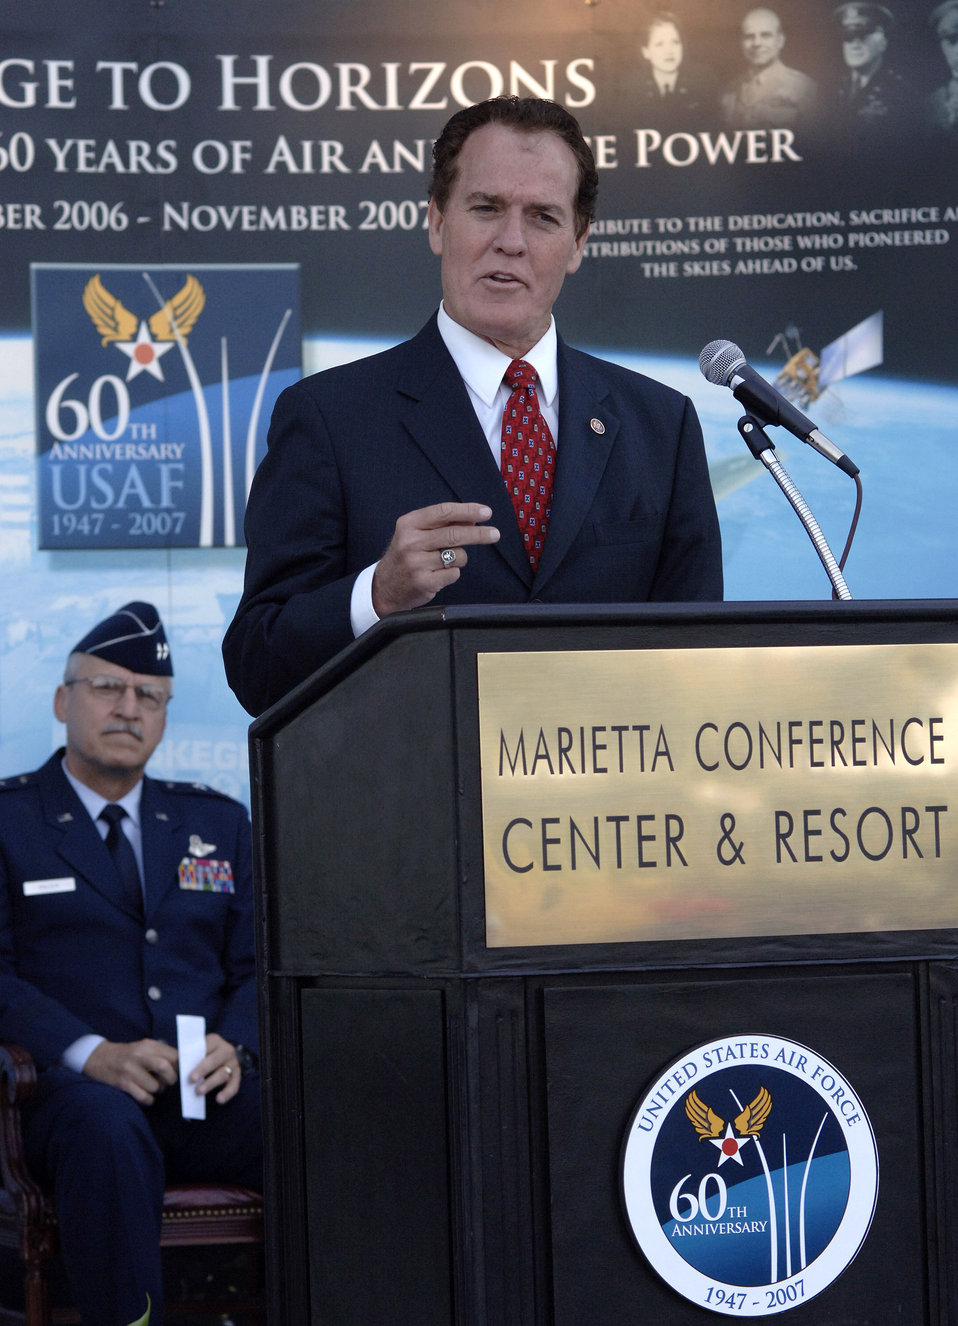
Air Force Week Atlanta kicks off

Rep. Phil Gingrey congratulates the Air Force on its 60th anniversary during a proclamation ceremony kicking off Air Force Week Atlanta Oct. 8. The Air Force Week program is meant to increase the awareness and support of the public by informing them and involving them in activities that showcase the Air Force's diverse capabilities and missions, its accomplishments and the sacrifice of its Airmen. Atlanta is one of six cities throughout the country chosen to host an Air Force Week Oct. 8 to 14. The theme for the year is